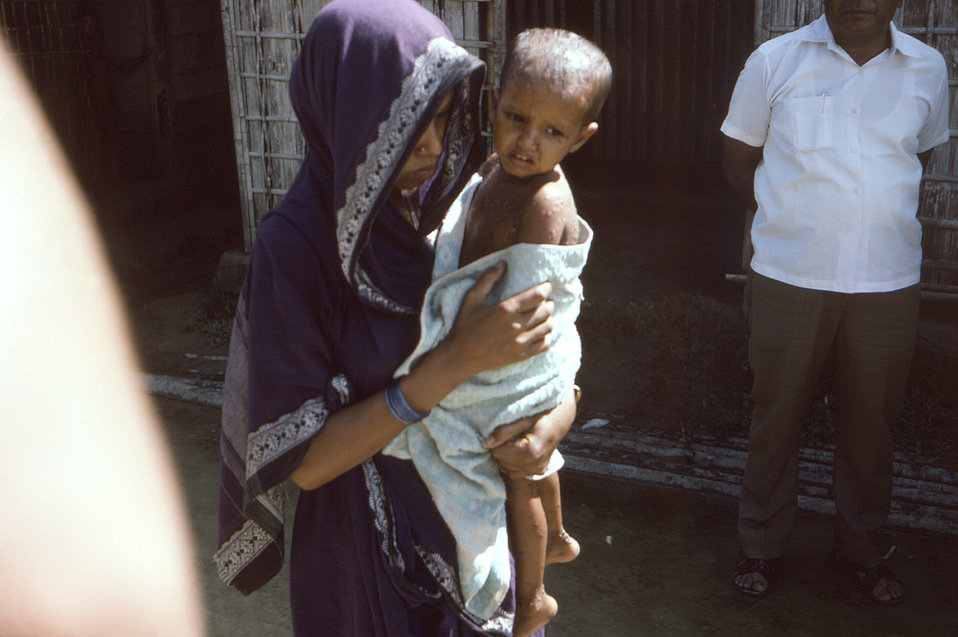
Photographed in the north-eastern Bangladesh District of Sylhet, this young girl was the sister of the boy labeled the 'High Commission Case', pictured in PHIL 12305. At this point, she herself was in the process of recovering from smallpox. See PHIL 12308, for another view of this young patient.